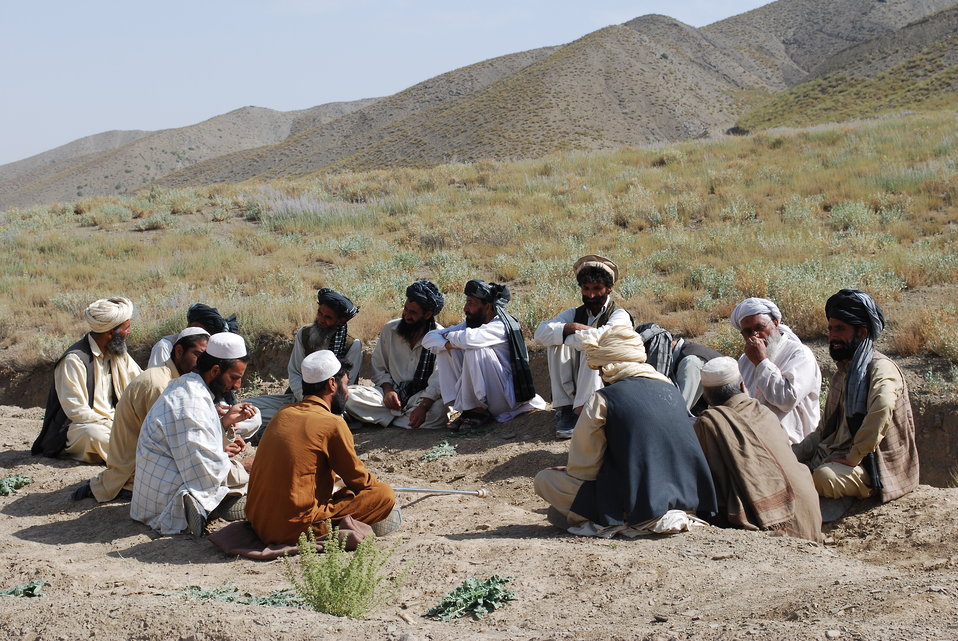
'On the Road' in Paktya Province